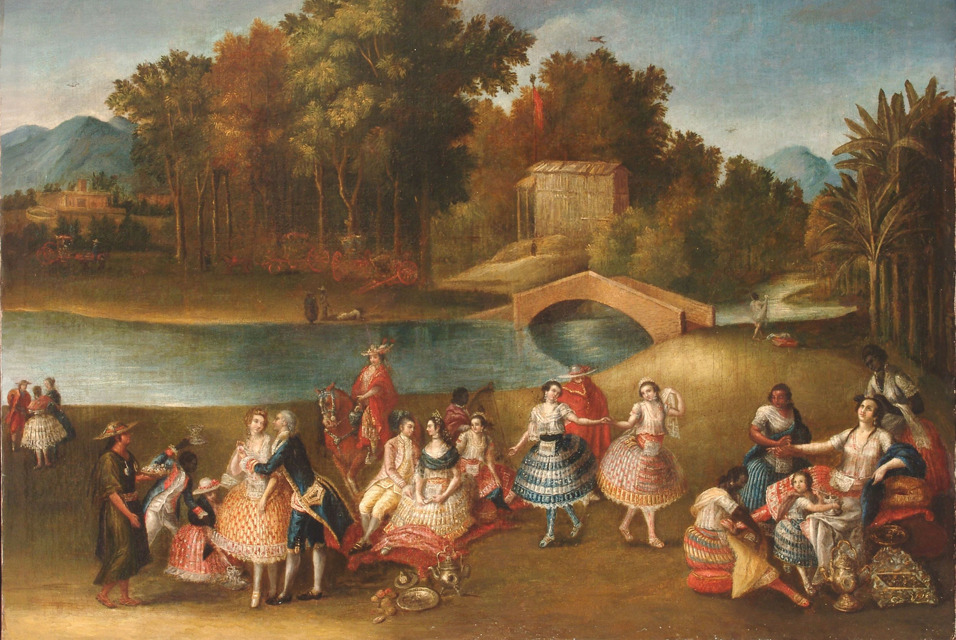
'A Merry Company on the Banks of the Rímac River', Lima school (63.5 x 86.4 cm), Brooklyn Museum